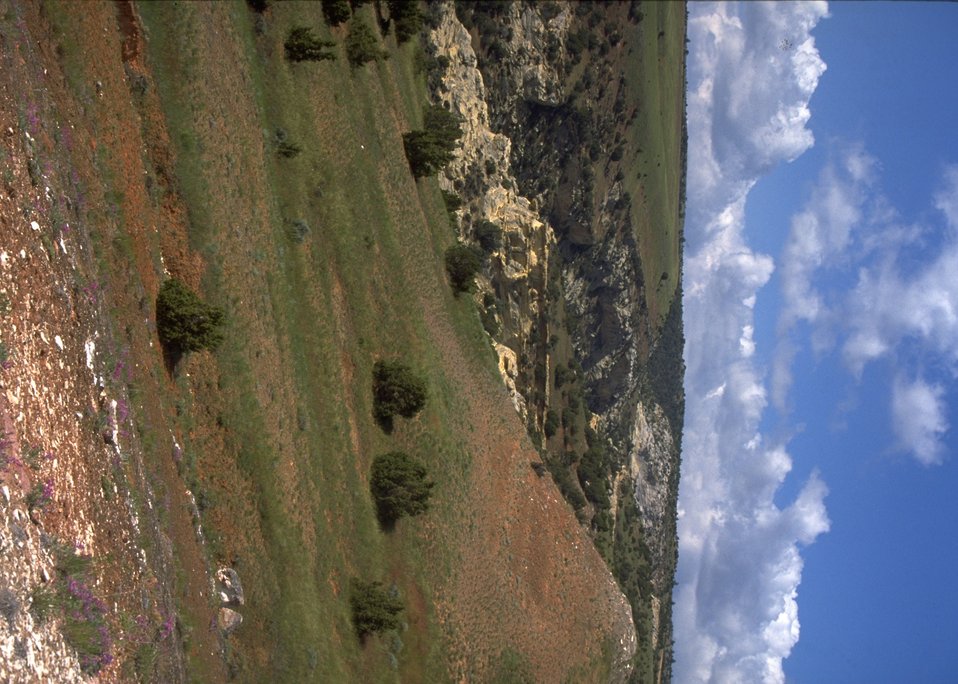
Scenic rock area.